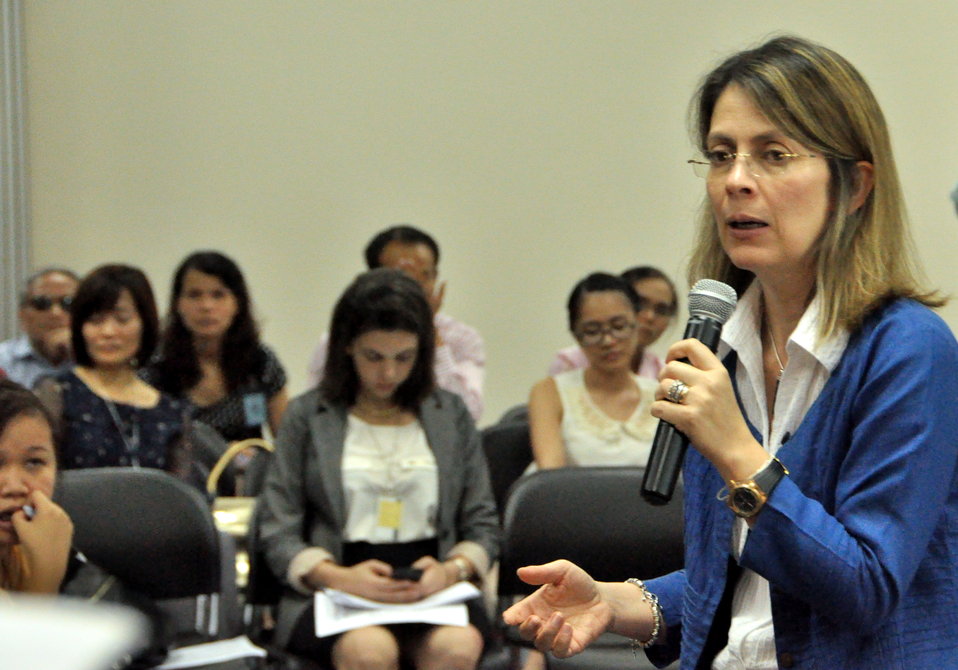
Development Grants Program Workshop in Hanoi

July 24, 2013